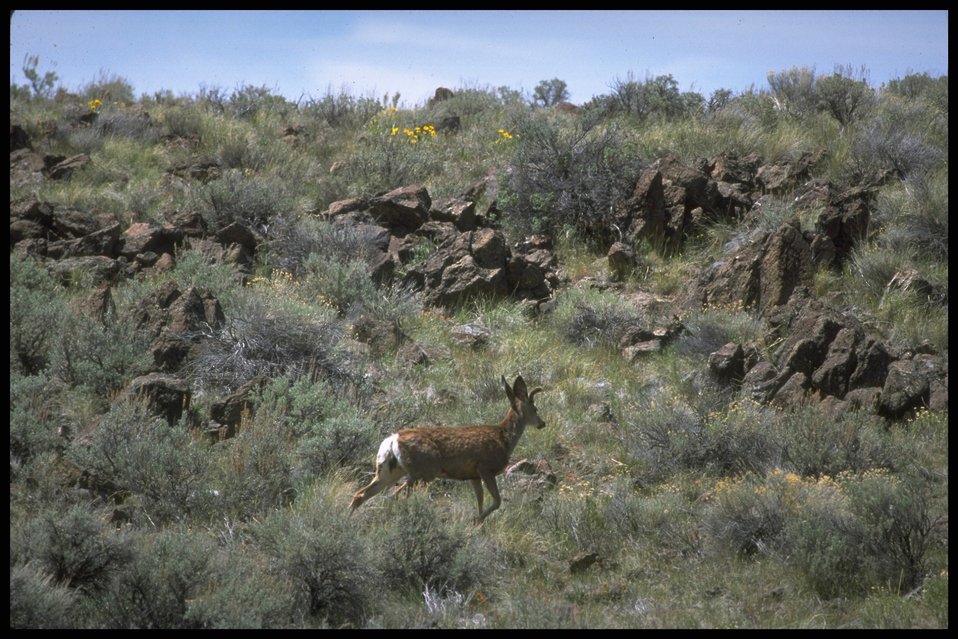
Far shot of deer, Lakeview District.